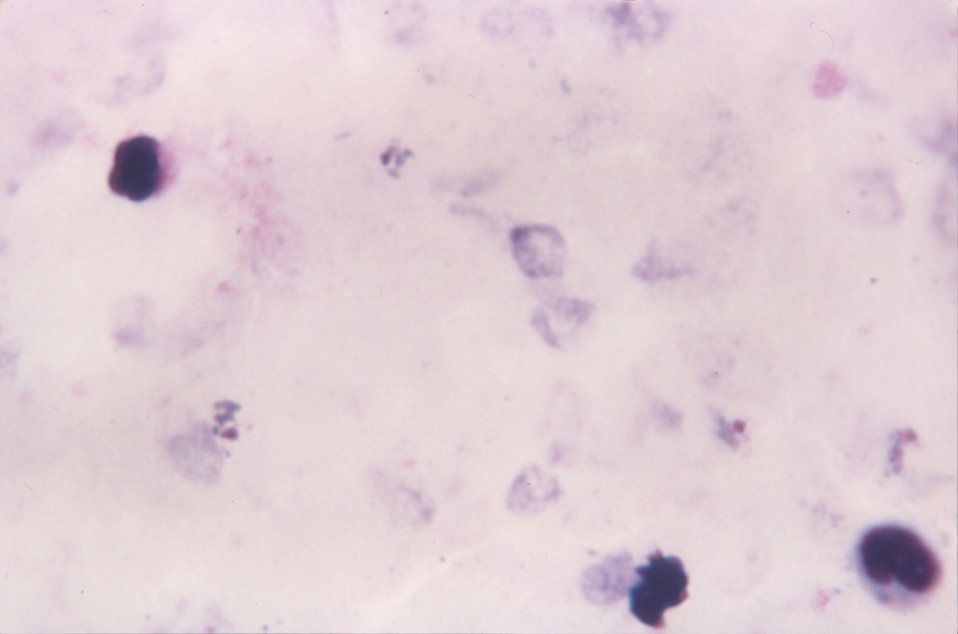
This micrograph of P. ovale shows growing trophozoites with irregular cytoplasm, evident pigmentation, with no stippling.